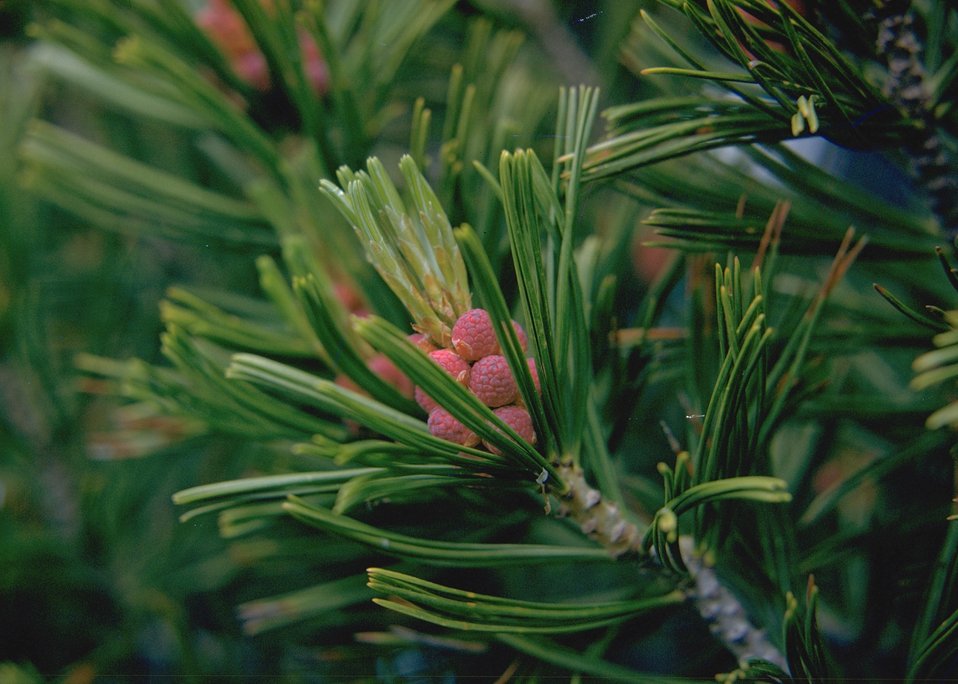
White Bark Pine, (Picea albicaulis).